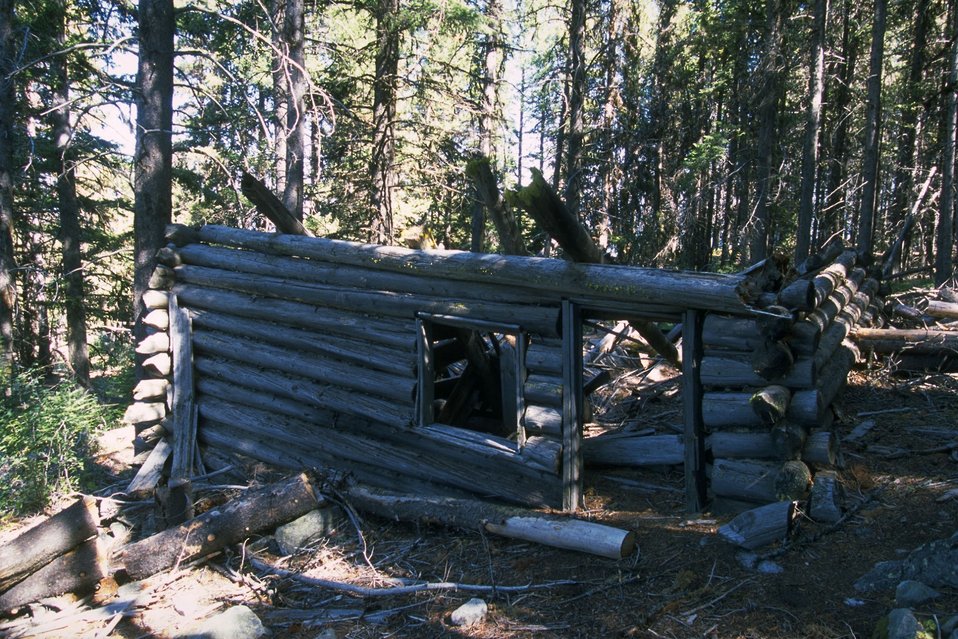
Historic cabin in Coloma Ghost Town